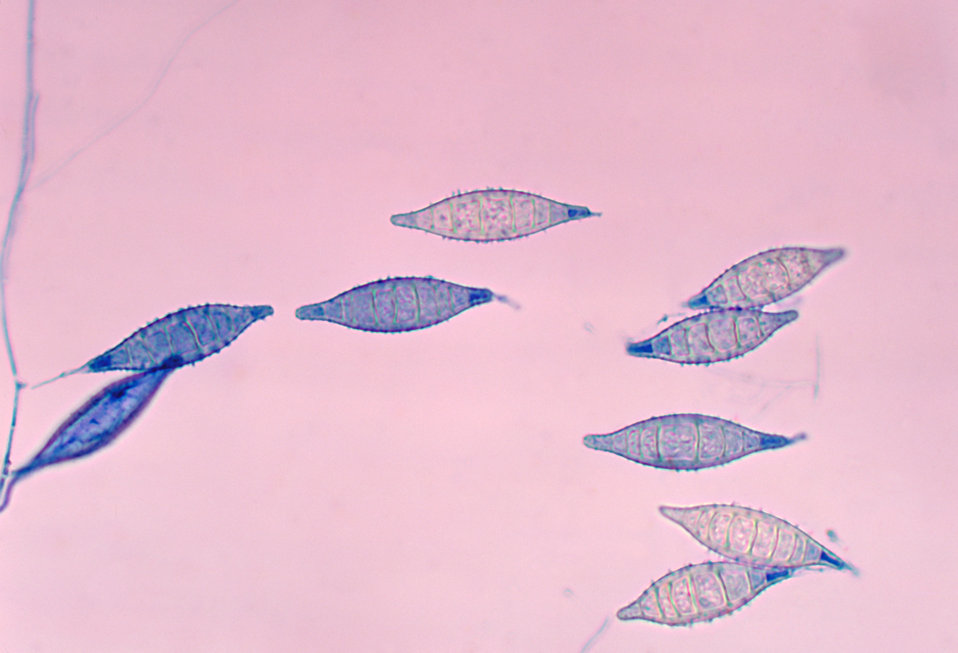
This photomicrograph shows a number of Arthroderma otae, formerly Nannizzia otae, fungal macroconidia.